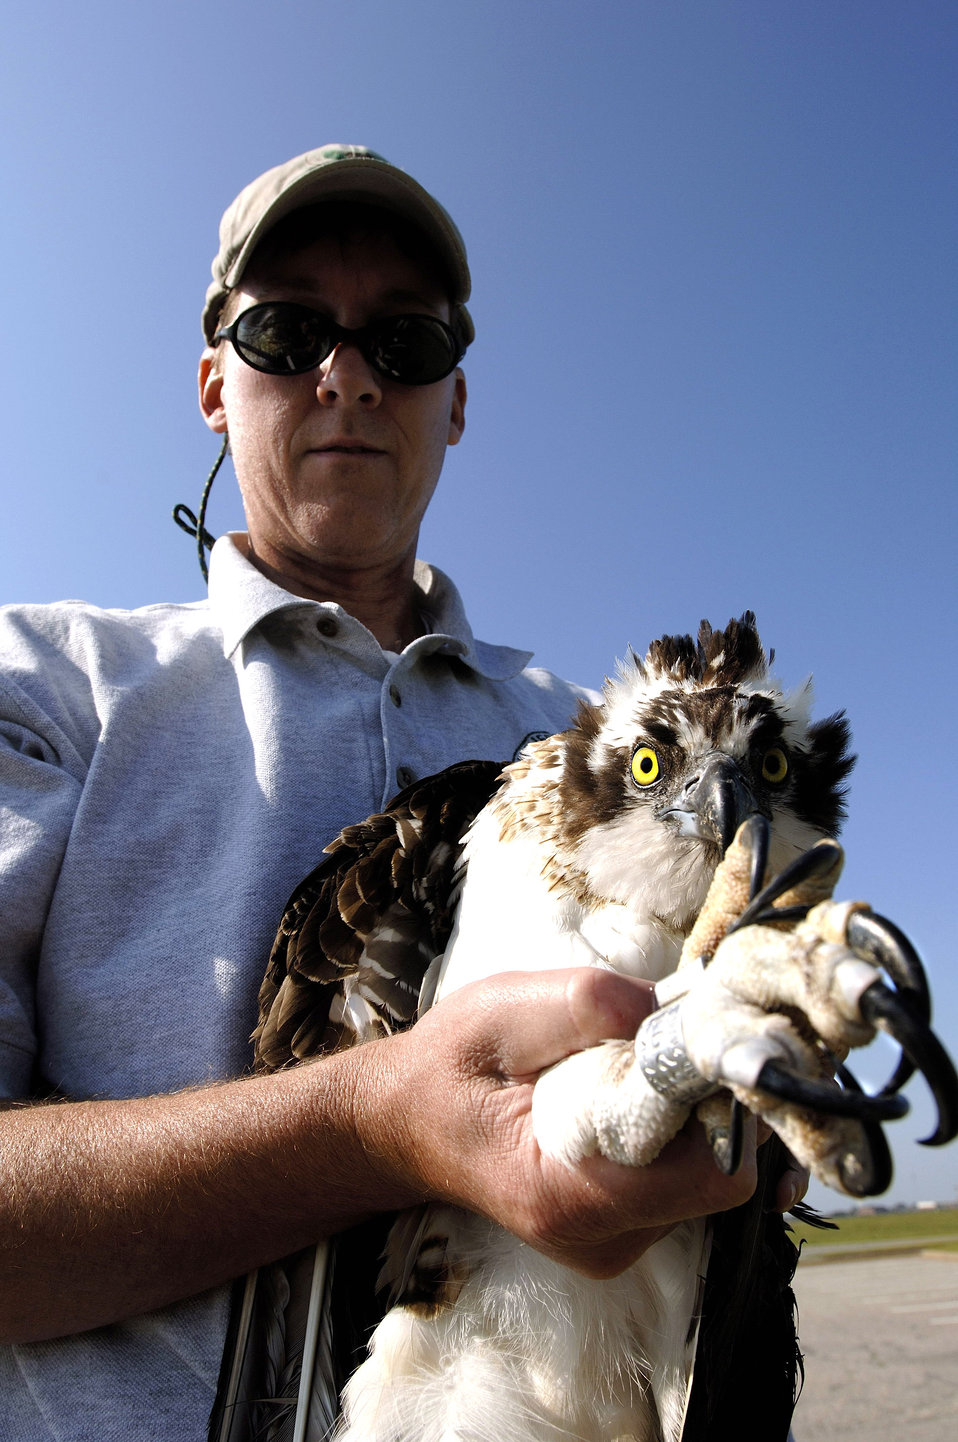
Osprey tracking

Brian Dorr of the U.S. Department of Agriculture shows the